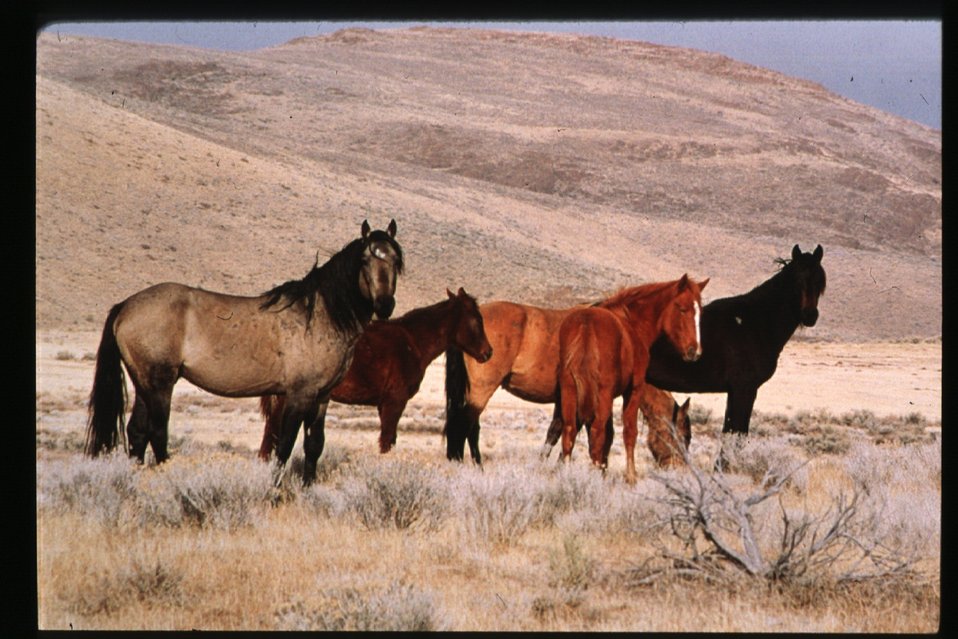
Wild horses Wild Horse and Burro Adoptions Program Owyhee Field Office Boise Corrals Lower Snake River District LSRD